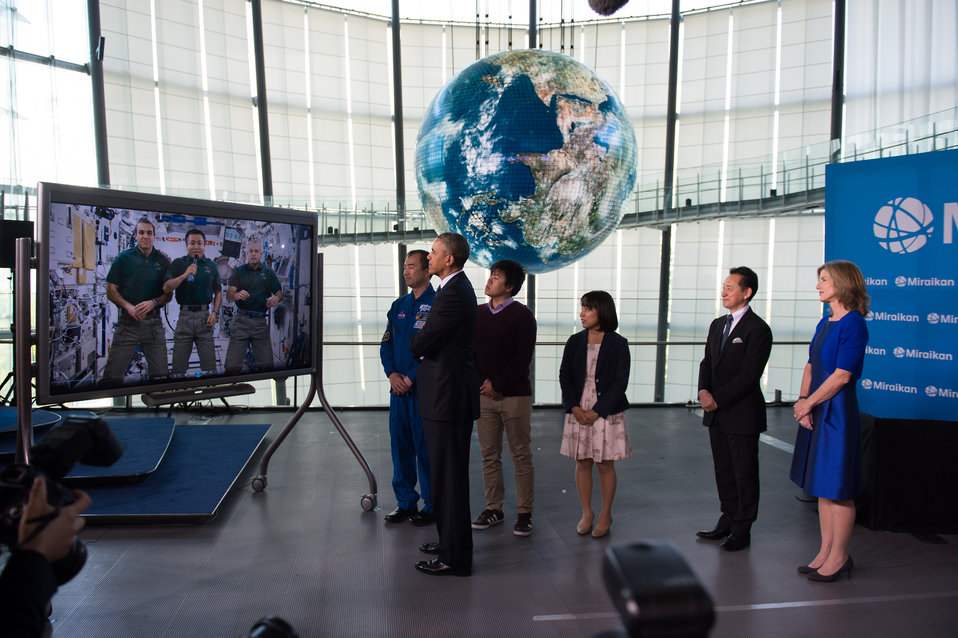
President Obama and Ambassador Kennedy Watch Space Station Video

U.S. President Barack Obama, with U.S. Ambassador to Japan Caroline Kennedy, Executive Director Mamoru Mohri of the Miraikan (the National Museum of Emerging Science and Innovation), Japanese astronaut Soichi Noguchi, and students, watches a video message from the International Space Station during his visit to the museum in Tokyo, Japan, on April 24, 2014.